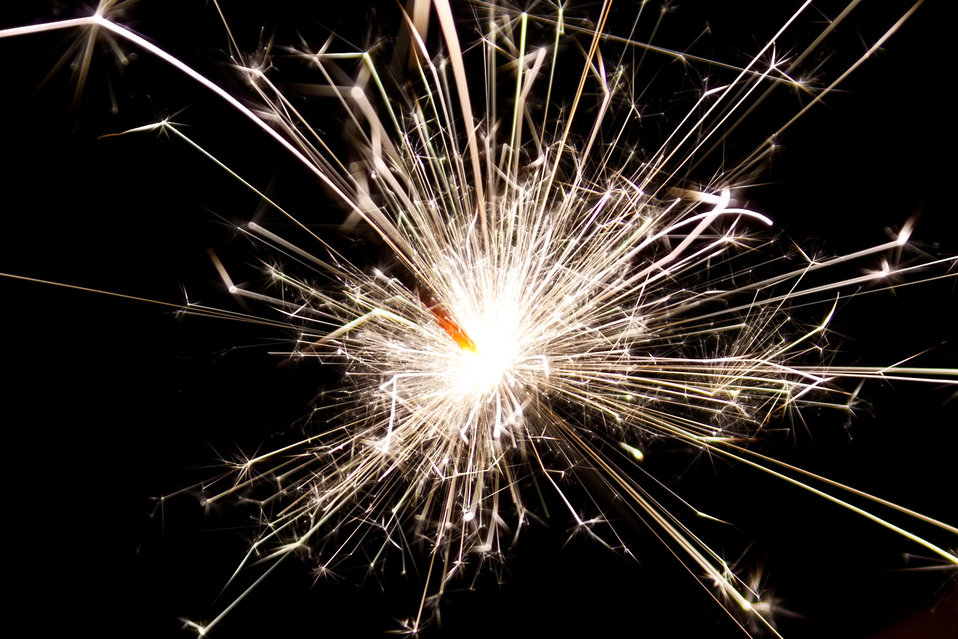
Sparkling sparkler on dark background.